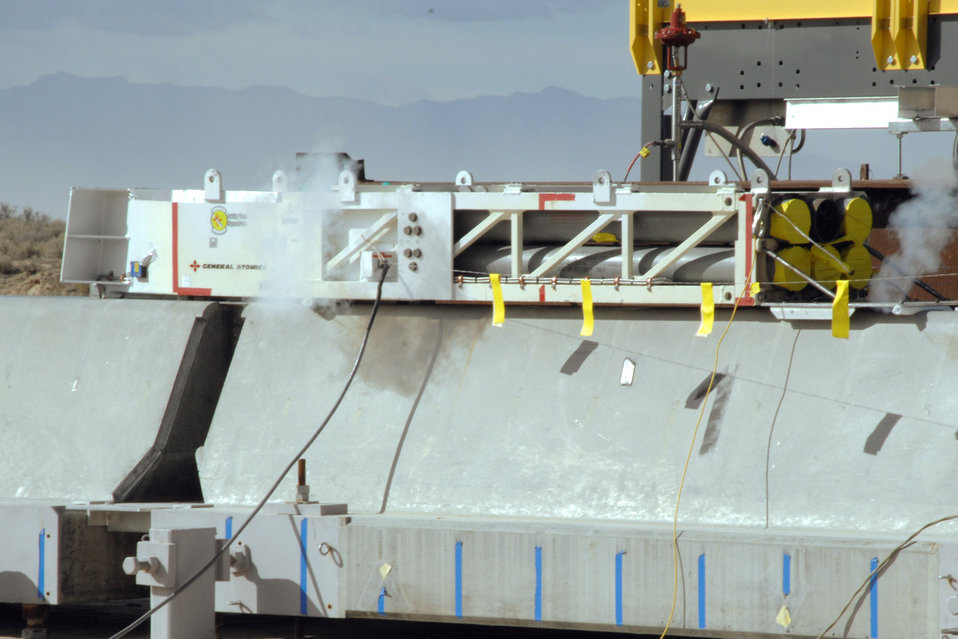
Test track t

A magnetically levitated rocket sled prepares to launch Feb. 21at Holloman Air Force Base, N.M. Unlike the conventional track, which can house vibrations up to 80 G's, the magnetic-levitation track reduces vibrations to about two to six G's.